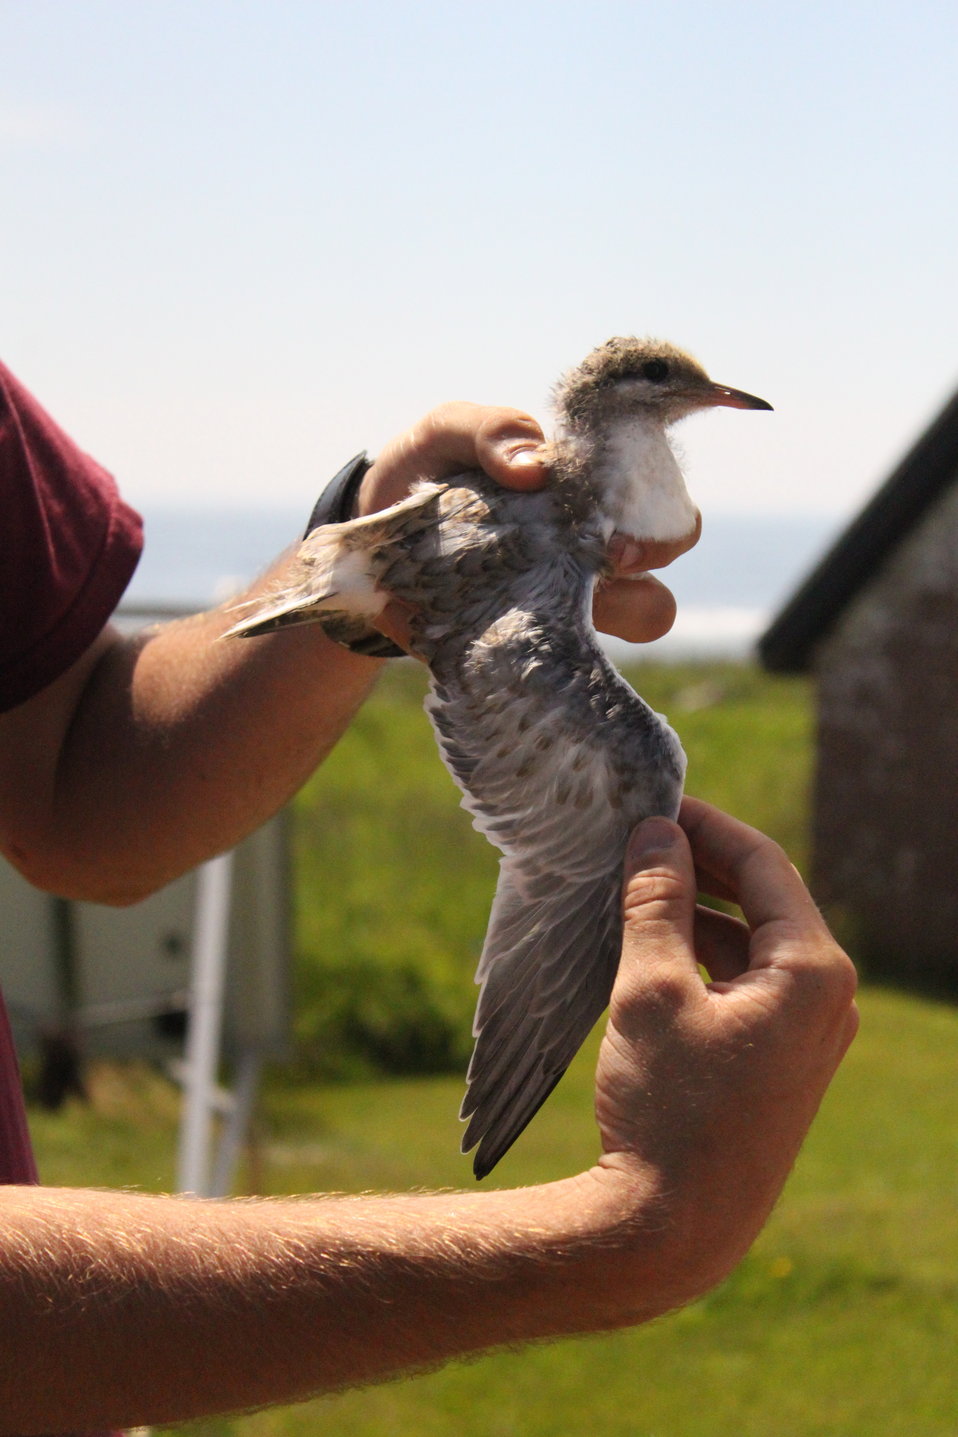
Tern Chick Wings